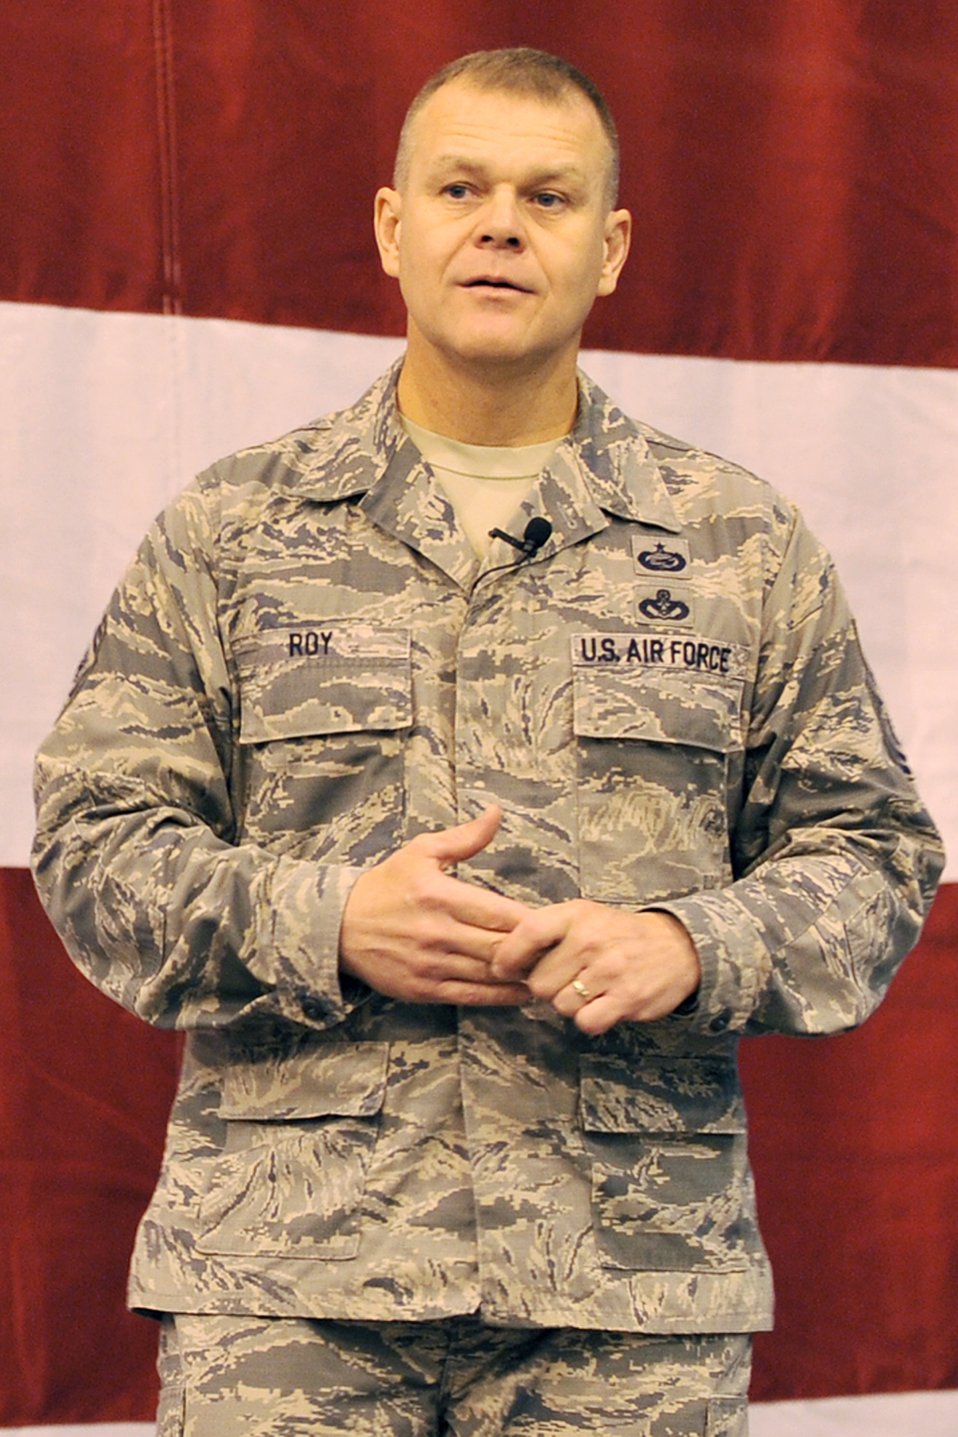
CMSAF visits Offutt

Chief Master Sgt. of the Air Force James Roy addresses an audience during the enlisted call at Offutt Air Force Base, Neb., Aug. 19, 2011. Roy met with enlisted Airmen to discuss various topics and address their concerns.